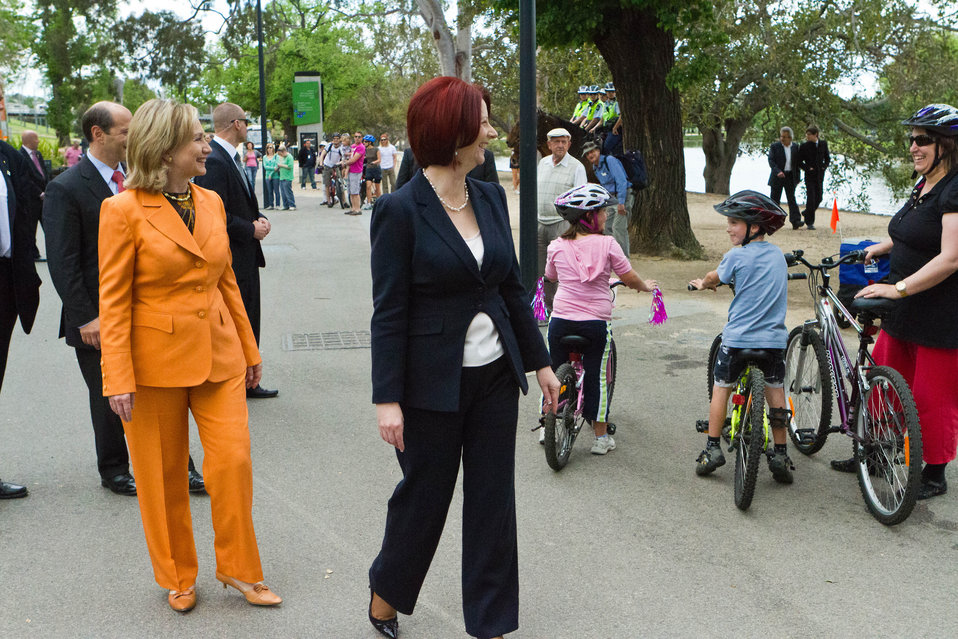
Australian Prime Minister Gillard and Secretary Clinton Greet People Along the Yarra River

Australian Prime Minister Julia Gillard, right, and U.S. Secretary of State Hillary Rodham Clinton stop to say hello to passersby along the Yarra River in Melbourne, Australia, on November 7, 2010.